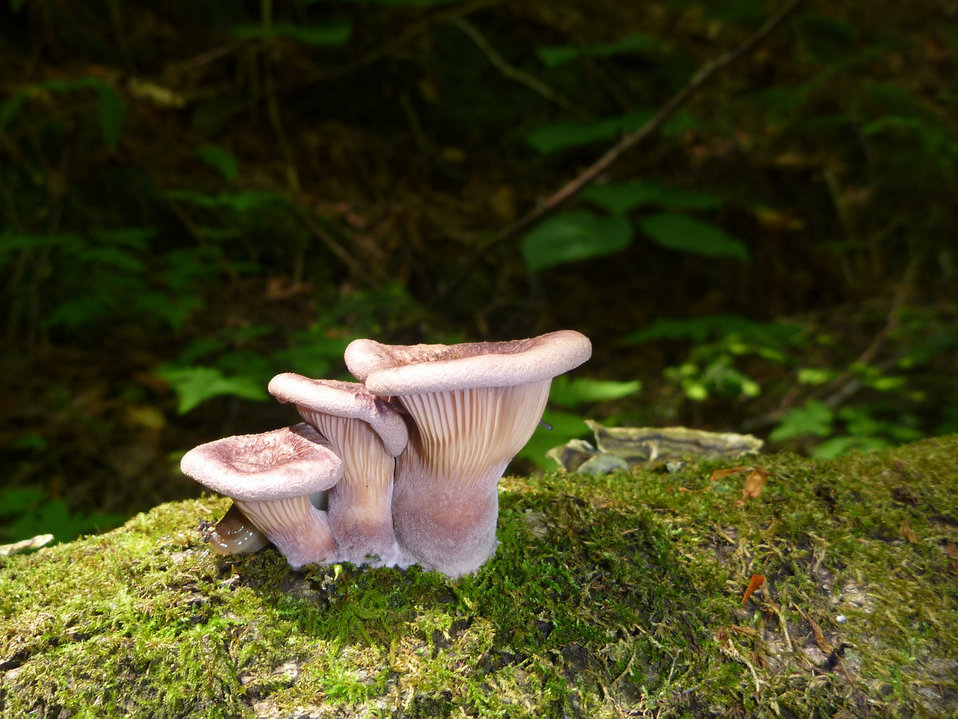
Mushrooms

Slug hiding behind mushrooms along Bradley Brook at White River National Fish Hatchery.